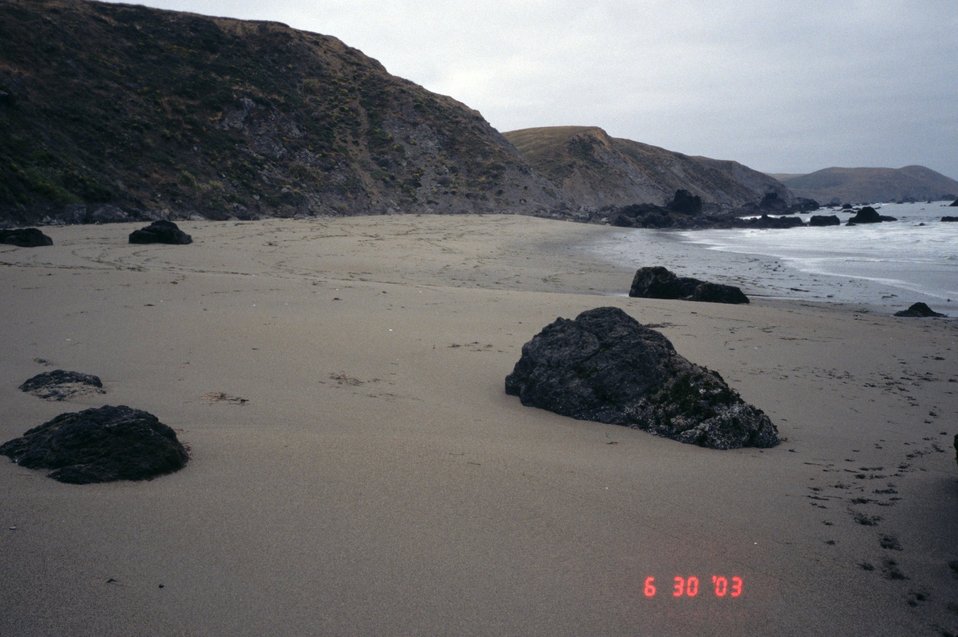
Pinnacle Gulch Beach